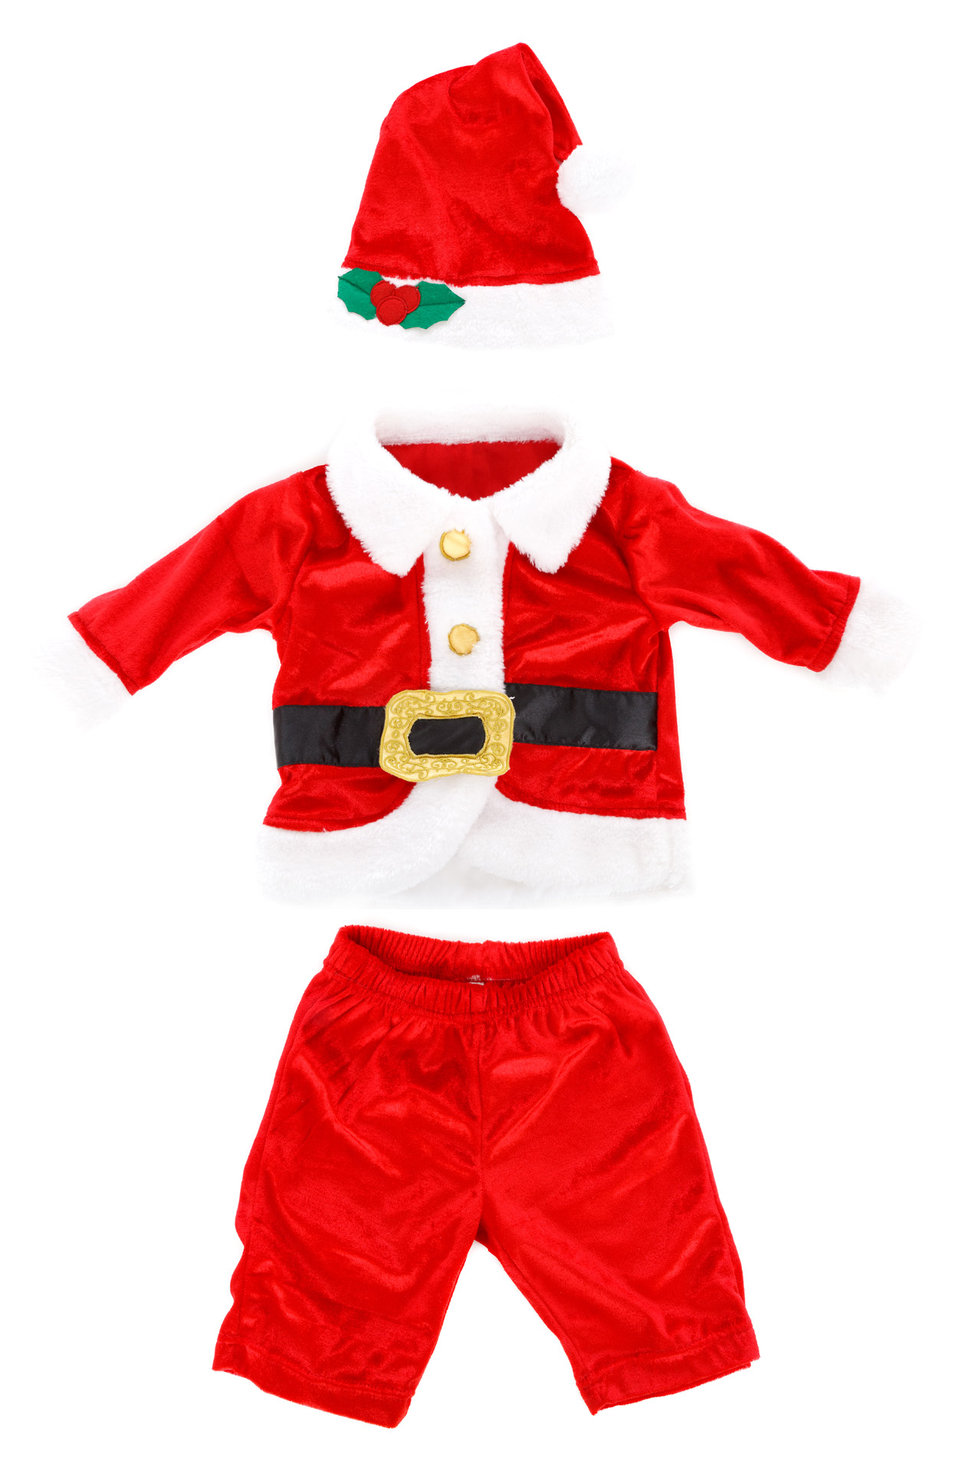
Santa claus suit

Santa claus's clothes isolated on white background. so you could try to dress somebody using photoshop..